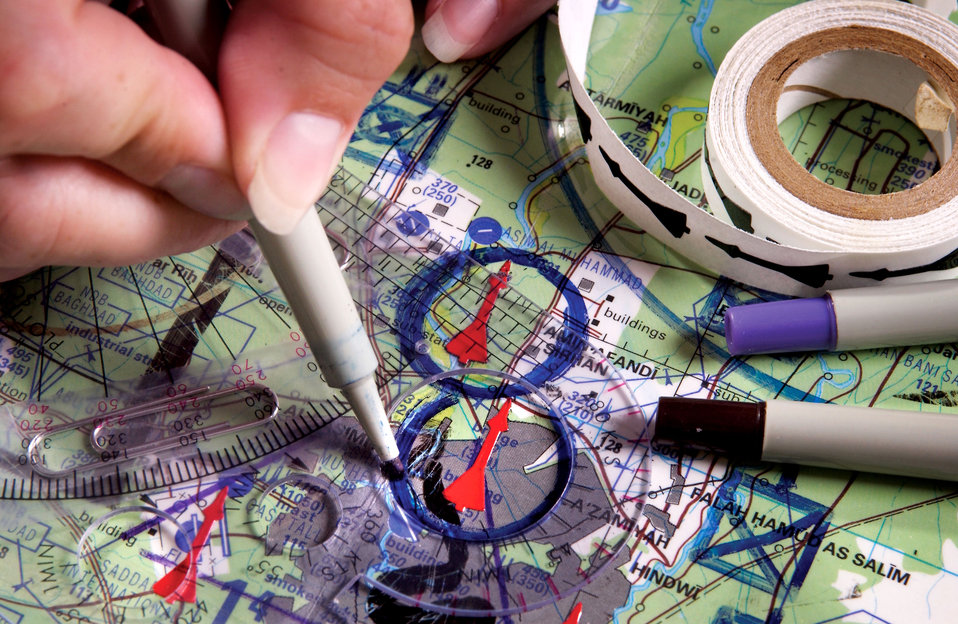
Target acquired

GOODFELLOW AIR FORCE BASE, Texas -- Capt. Natasha Ziegler, a student enrolled in the Combat Targeteering course at the 315th Training Squadron here, responds to a simulated Middle East conflict scenario by implementing information derived from various intelligence sources to plot the